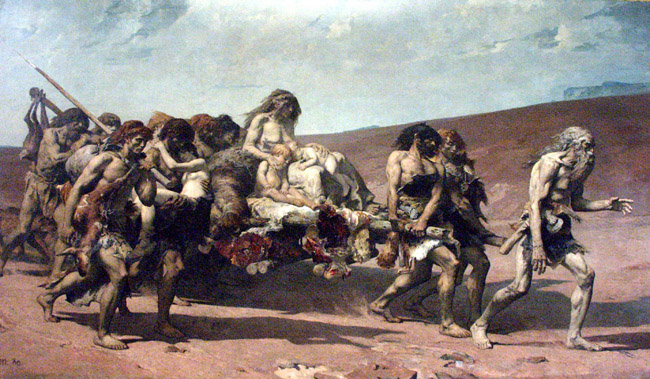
Fernand Cormon 004